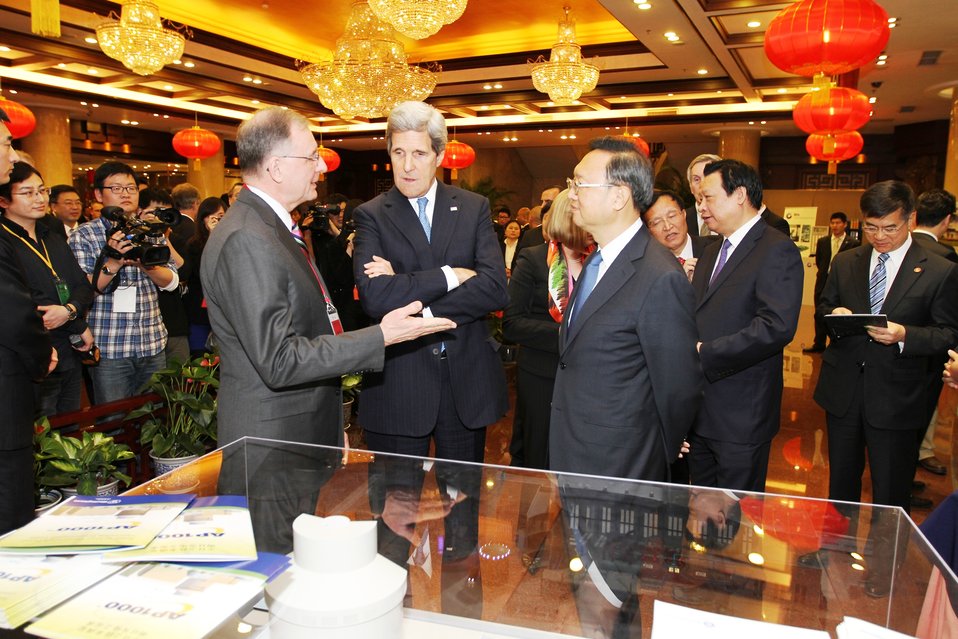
Secretary Kerry Tours Exhibit of Energy and Environmental Projects by U.S. and Chinese Companies

U.S. Secretary of State John Kerry and Chinese State Councilor Yang Jiechi explore interactive exhibits highlighting energy and environmental projects by U.S. and Chinese companies in Beijing, China, on April 13, 2013.